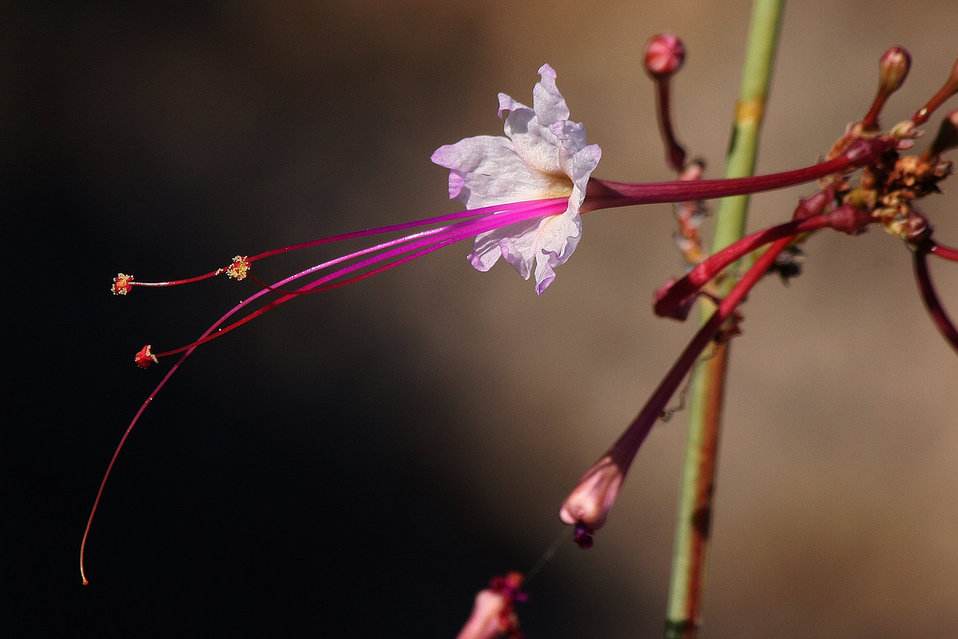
pecos ringstem

Bitter Lake National Wildlife Refuge, NM